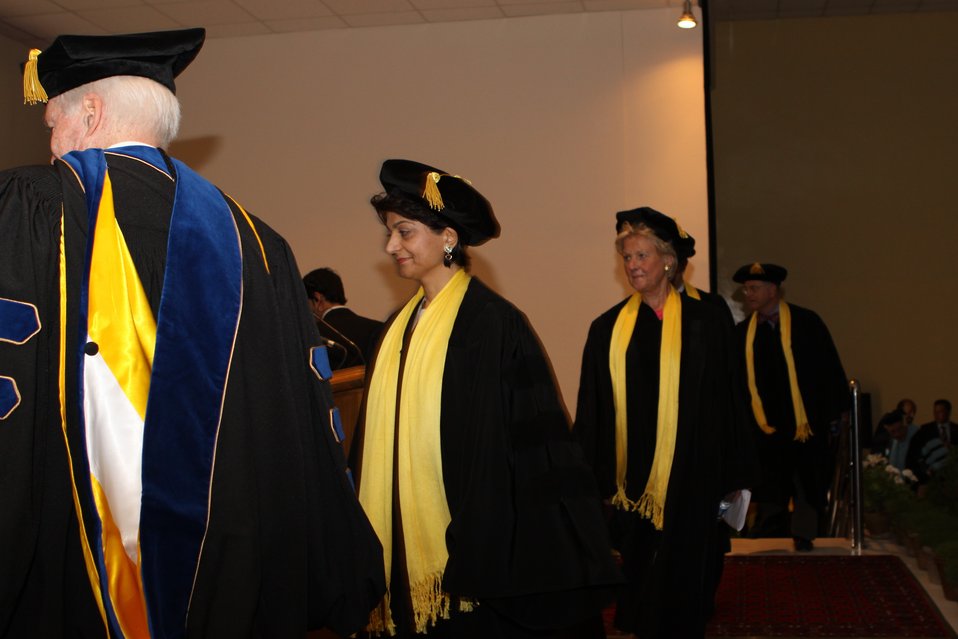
100526 AUAF Graduation 117